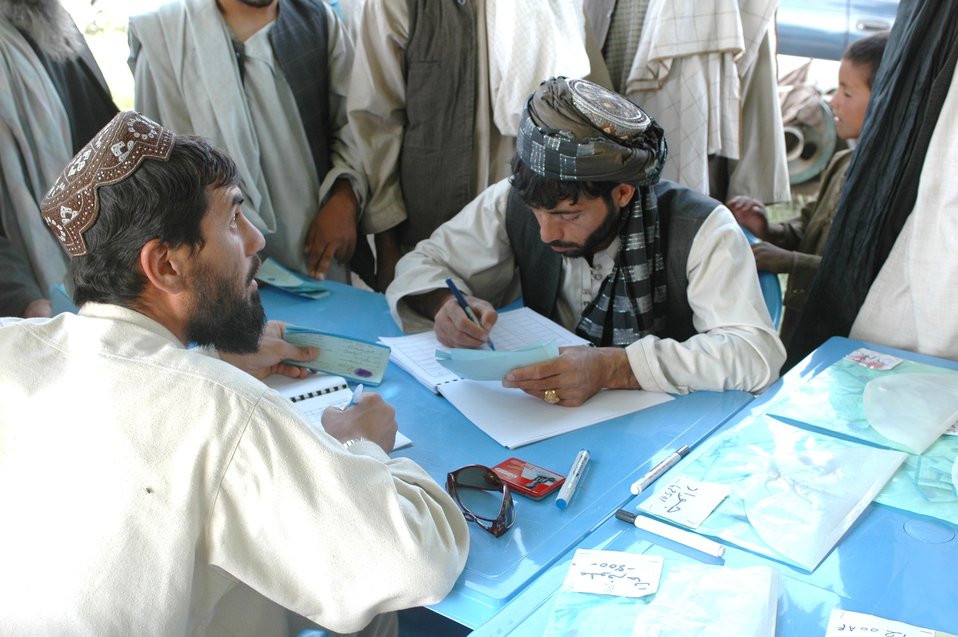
Dr Shah Visits Argandab April 10, 2010